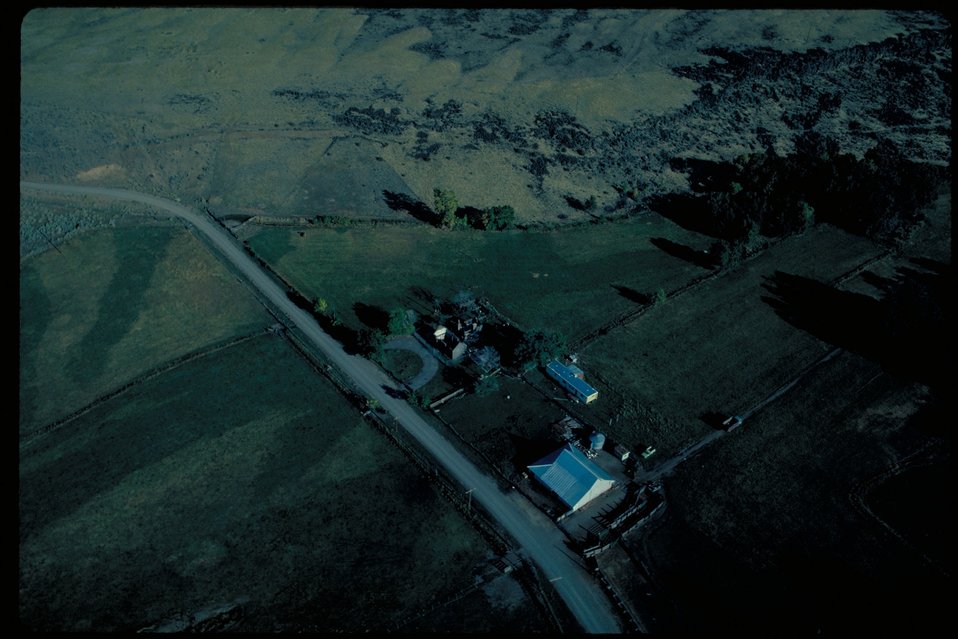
Station on Canyon Creek Oregon Trail Lower Snake River District